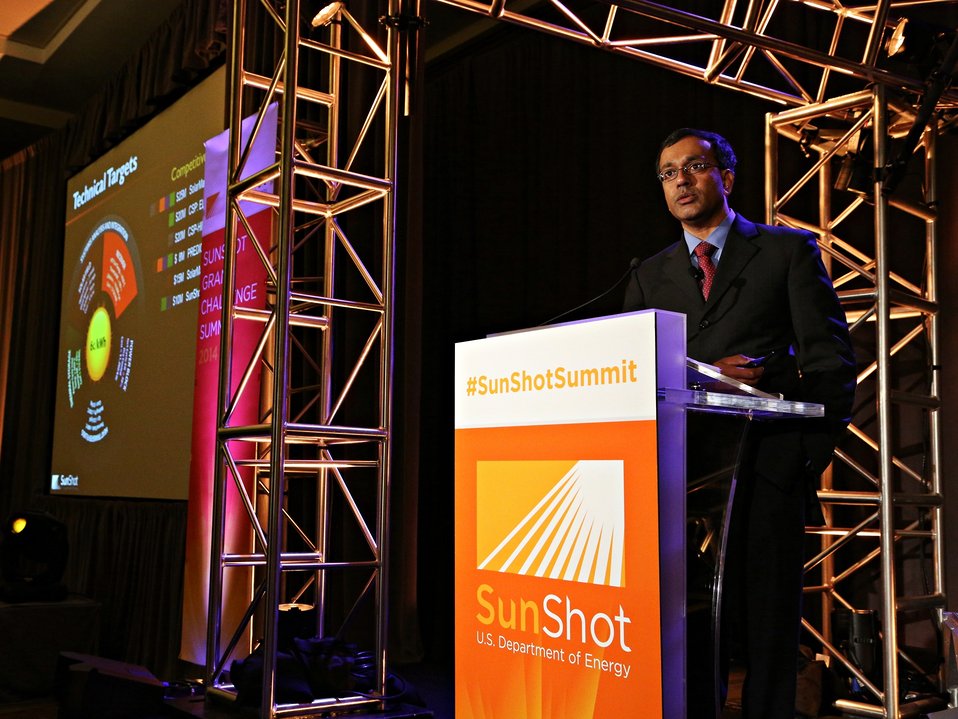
Day 2 Keynote Session 26

Dr. Ranga Pitchumani, Chief Scientist & Concentrating Solar Power Program Manager; System Integration Acting Program Manager, providing a SunShot Portfolio Overview.